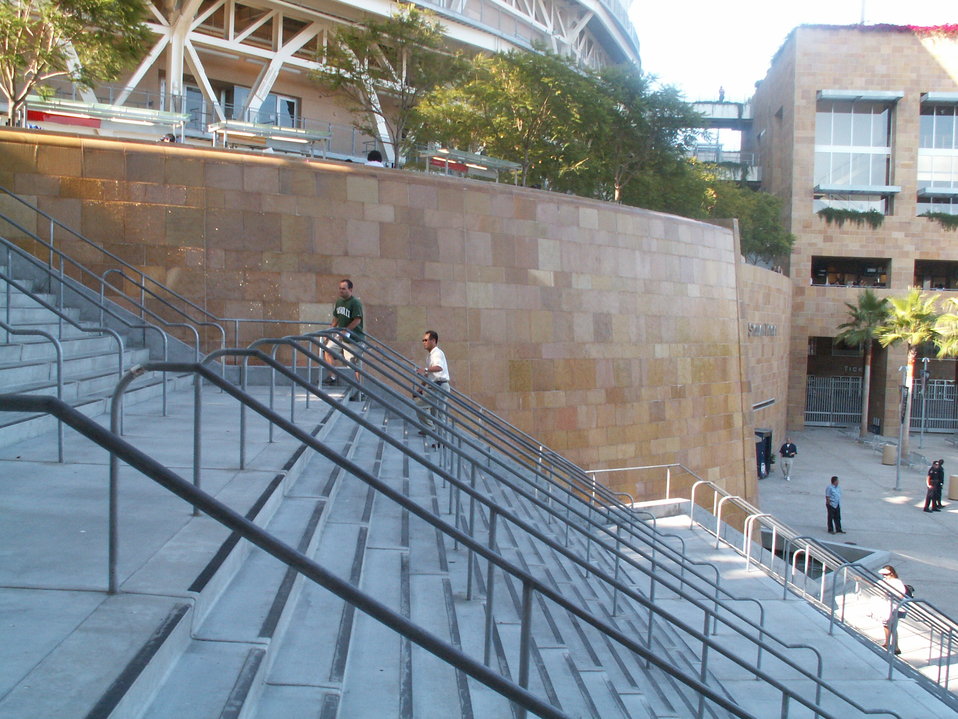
Picture taken by me. Use: Fill in Petco Park
03:08, 10 April 2006 . . SorryGuy . . 2272 x 1704 (1,929,454 bytes)